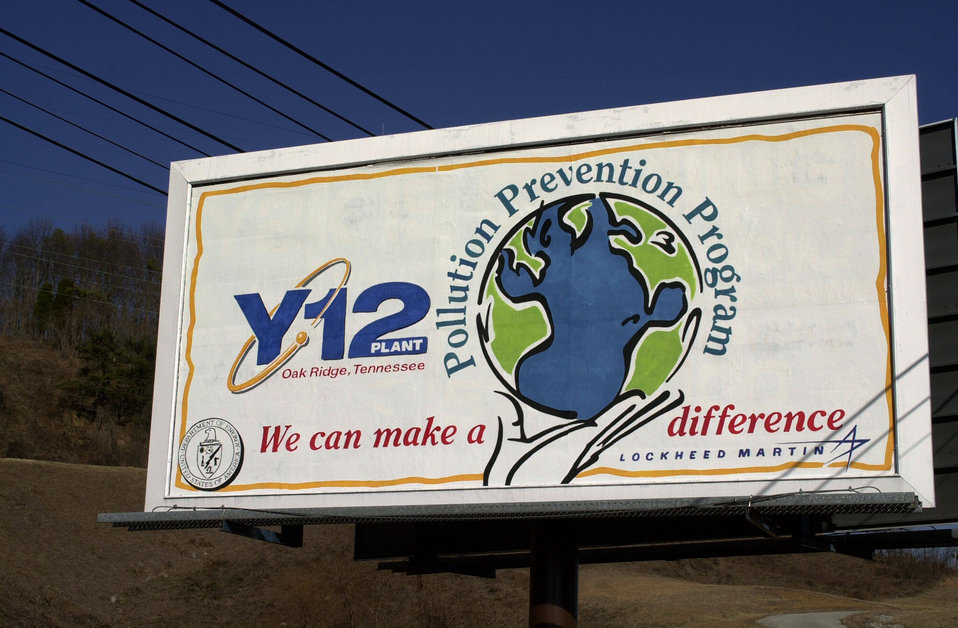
Y-12 Bill board Oak Ridge

00-0002-035 DOE photo by Lynn Freeny
Y-12 Bill board Oak Ridge Tennessee Jan. 2000